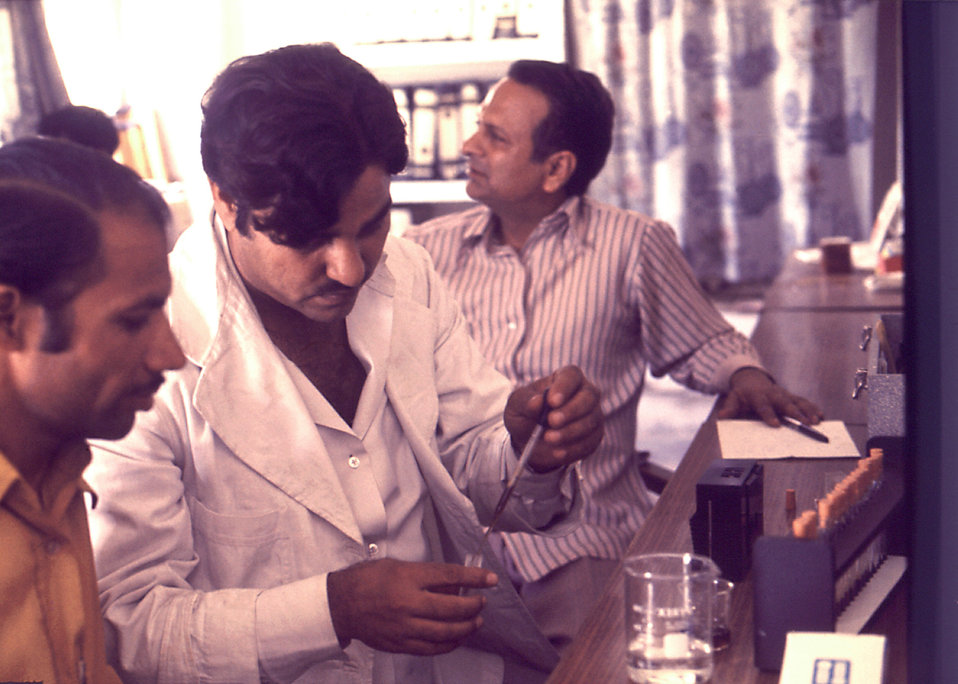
This Pakistani malaria program staffer is testing blood samples from malaria control workers in a 1977 malathion poison study.